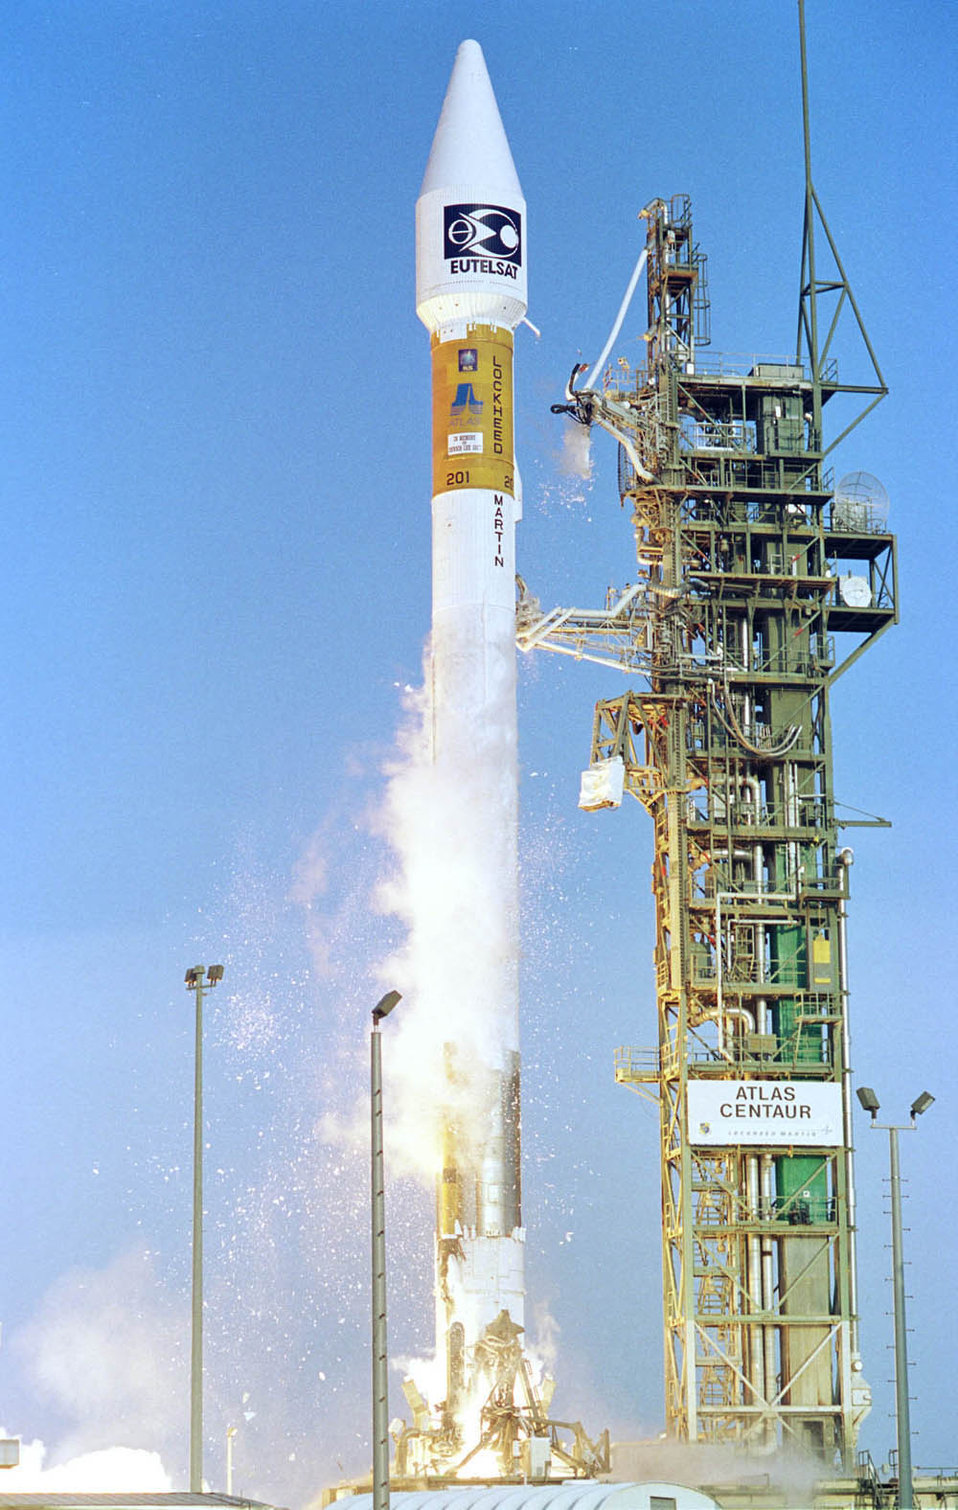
Atlas III

CAPE CANAVERAL AIR FORCE STATION, Fla. -- An Atlas III space lift vehicle made its debut on May 24, 2000 in a dramatic liftoff powered by the new Russian RD-180 engine. The liftoff occurred at 7:10 p.m. Eastern Daylight Time, followed by successful separation of the W4 spacecraft and insertion into geosynchronous transfer orbit just under 29 minutes later. The AC-201 flight marks the first Russian rocket engine to be provided by Pratt & Whitney and is the first Russian rocket engine to power an American launch vehicle. A P&W upper stage engine, the RL10 (RL10A-4-1B model), powered the Atlas first single-engine Centaur configuration.